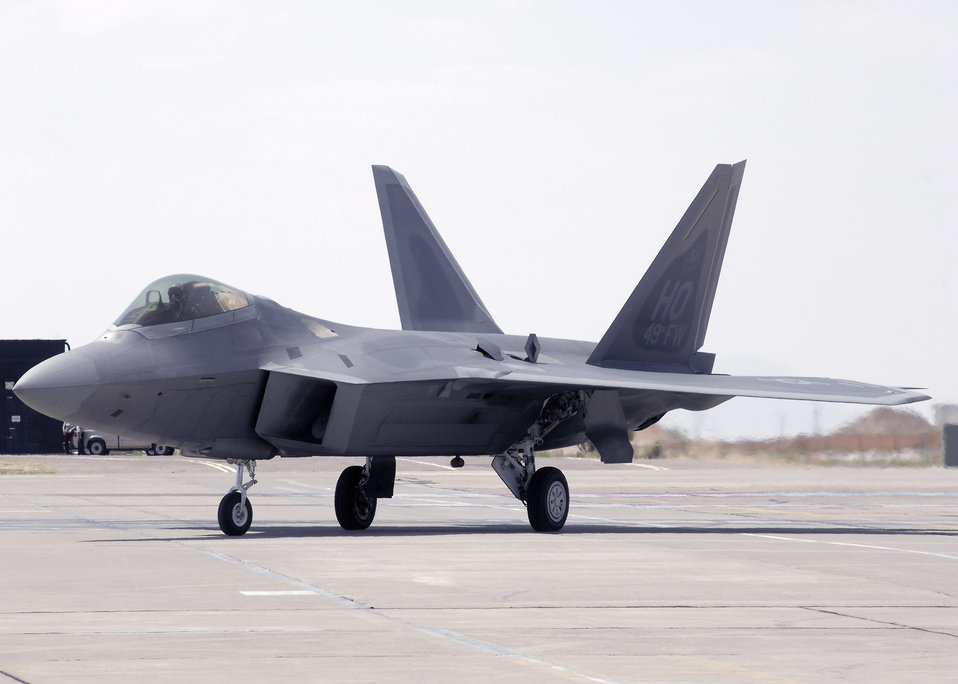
F-22 Raptor

An F-22 Raptor, like the one shown in this file photo, has crashed north of Edwards Air Force Base, Calif. The aircraft was on a training mission at the time of the accident.